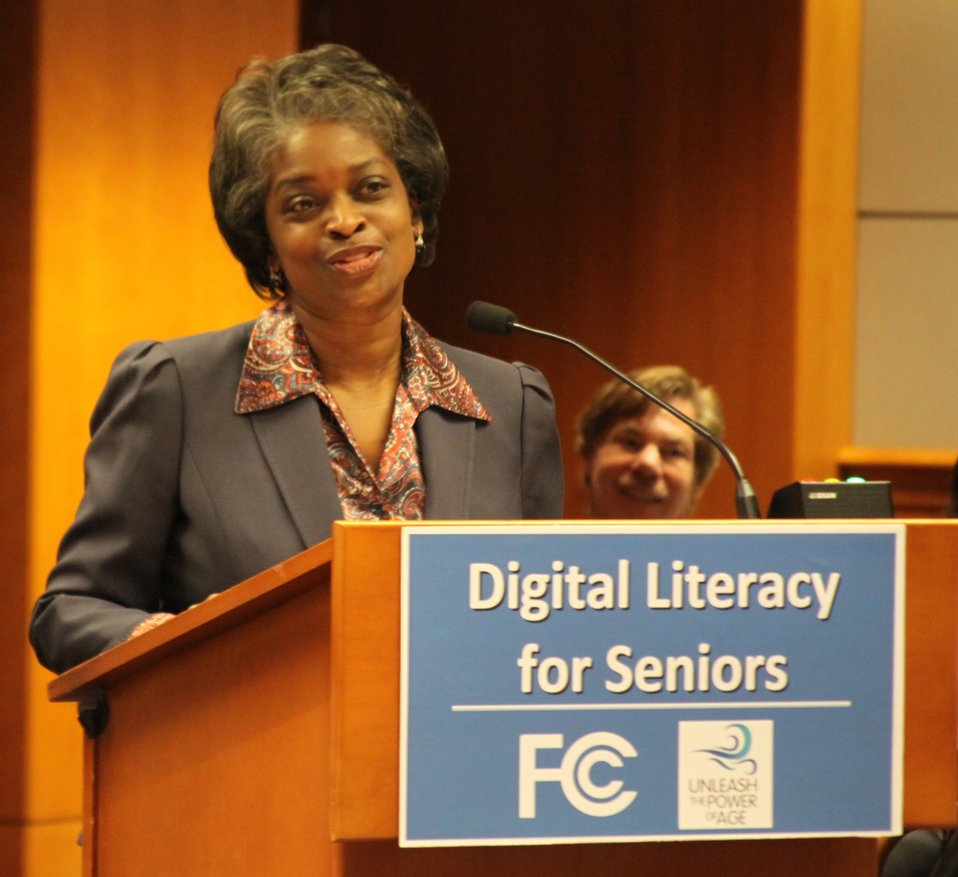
Commissioner Clyburn’s Remarks: Digital Literacy for Seniors: How the Internet Can Benefit Older Americans, April 24, 2013